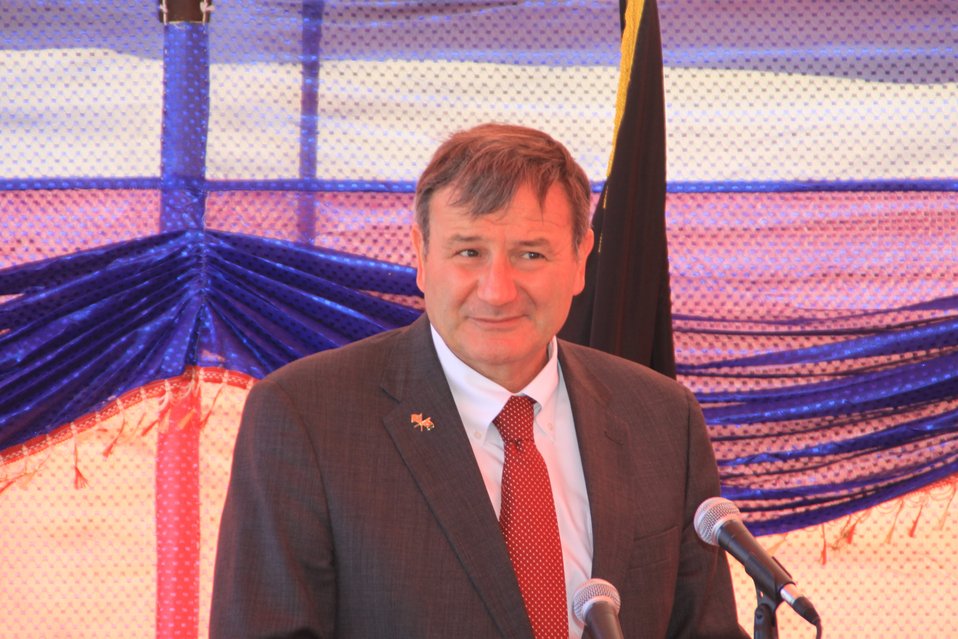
AVIPA Plus Wheat Seed Distribution 101005